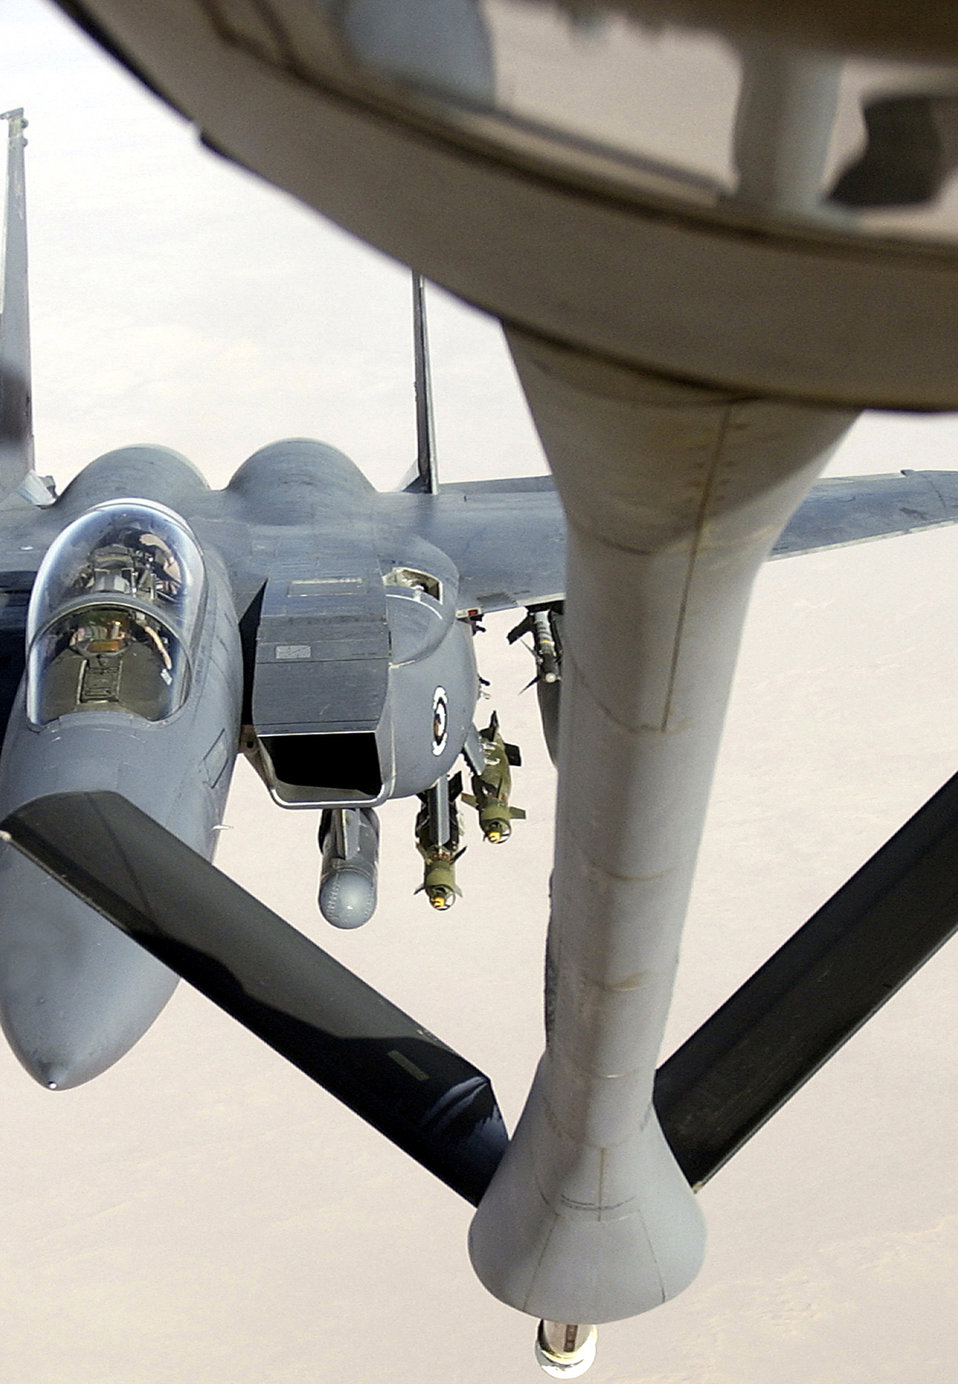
Eagle pit stop

OPERATION IRAQI FREEDOM -- An F-15E Strike Eagle stops to get fuel from a KC-135 before entering Iraqi airspace to patrol the No-fly zone. The tanker supplying the fuel was flown by pilots from the 379th Expeditionary Air Refueling Squadron in support of Operation Iraqi Freedom.